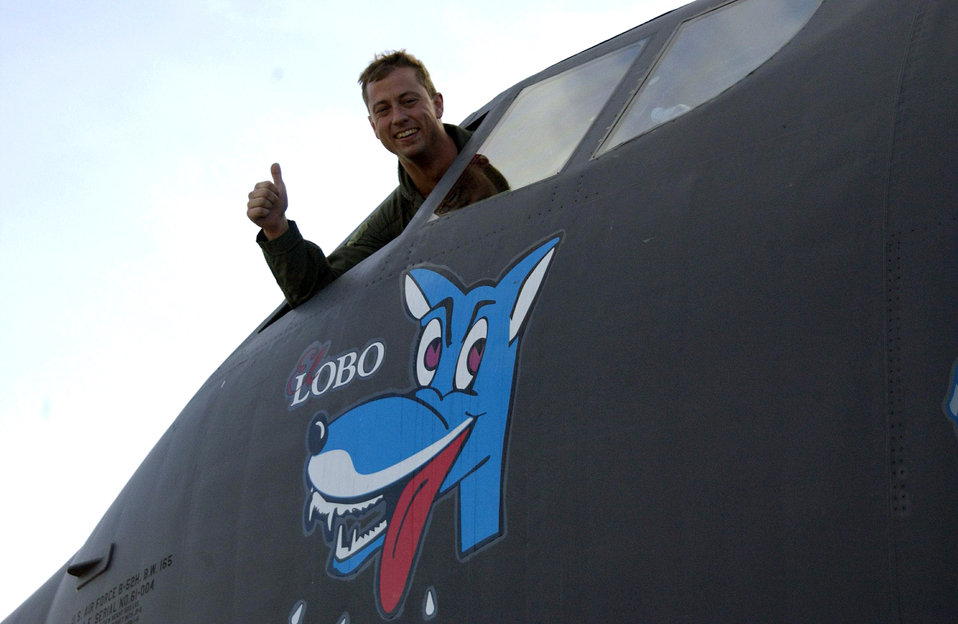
Barksdale B-52s arrive in Guam, complete bomber rotation

Maj. Eric Sikes gives a thumbs up sign from the cockpit of a B-52 Stratofortress Feb. 1 following his 17-hour flight from Barksdale Air Force Base, La., to Andersen AFB, Guam. Major Sikes was one of 300 Airmen from Barksdale AFB who arrived in Guam recently as part of a scheduled rotation of bomber units into the Pacific theatre.